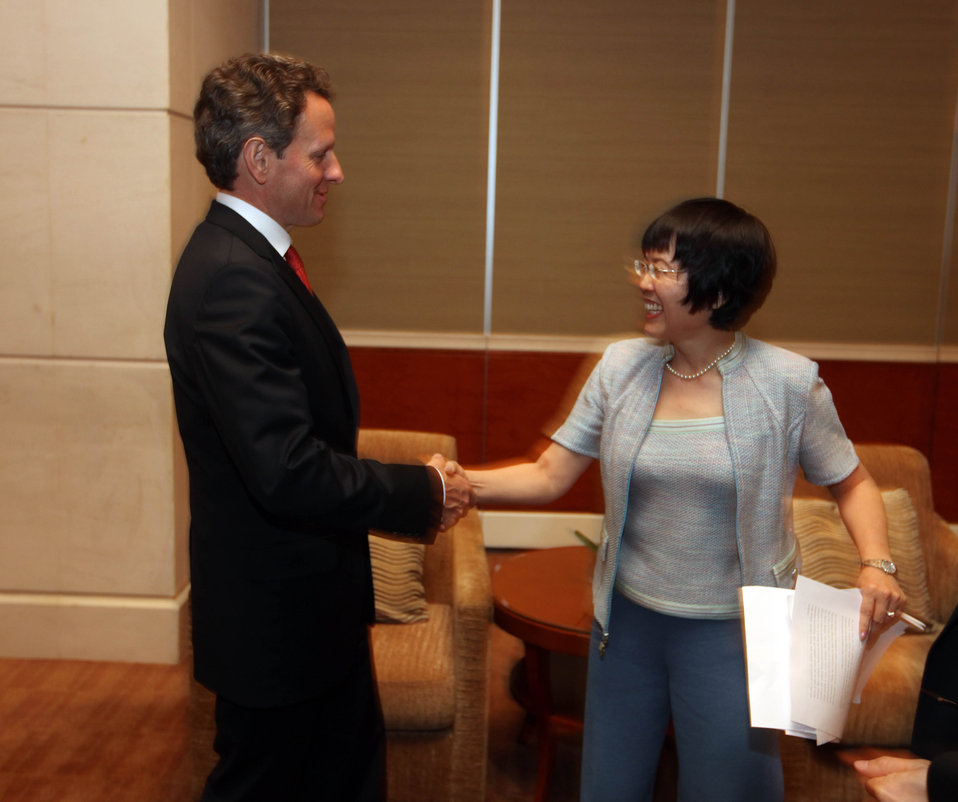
SandED 5/25/10

Secretary Geithner met with Hu Shuli of Caixin Magazine.